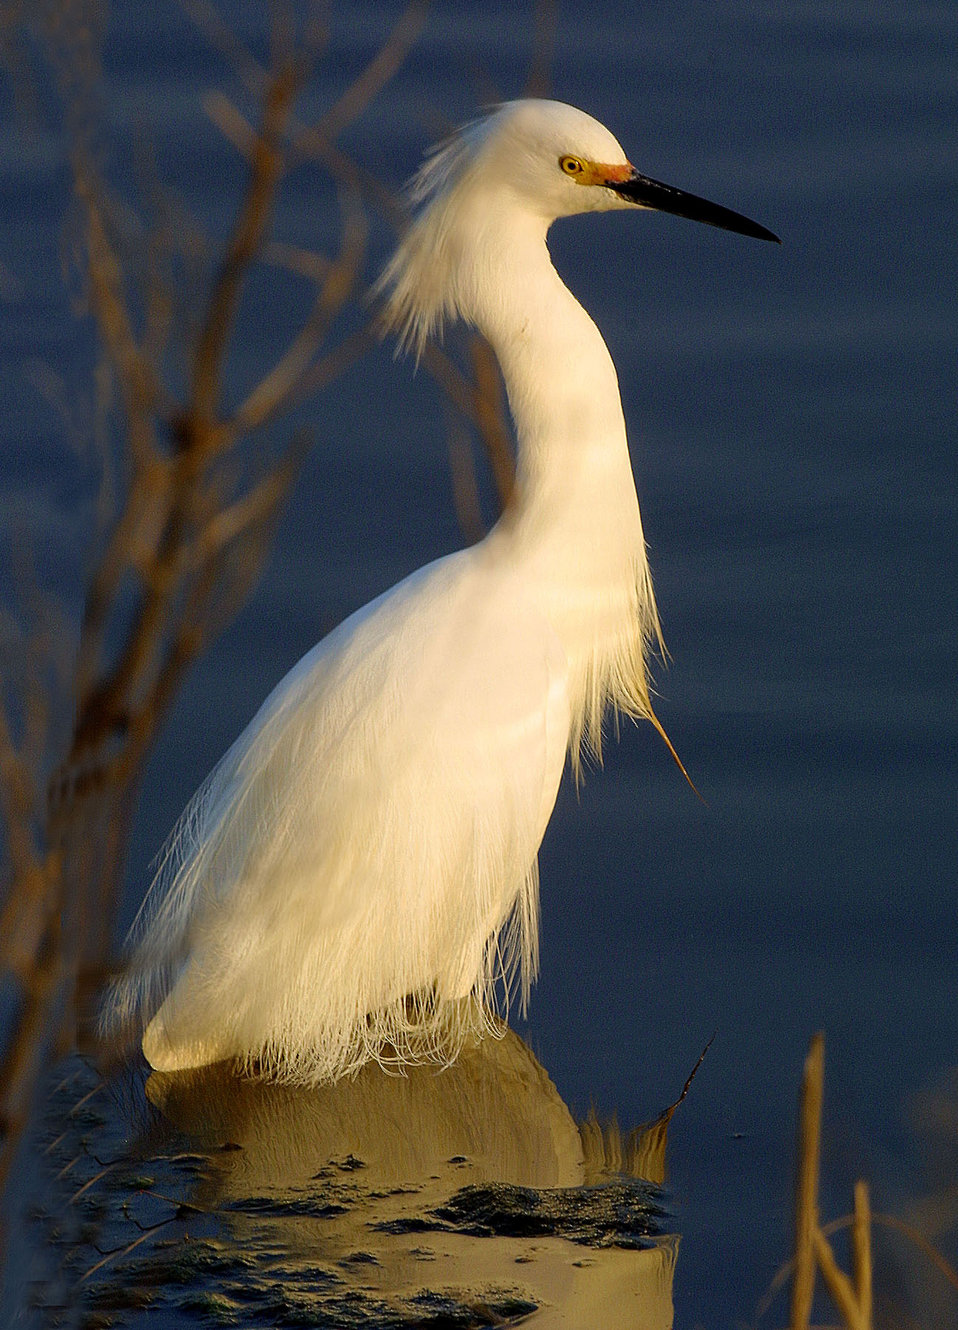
Photo of the Week - Snowy Egret (PA)

Photo of the Week - 7/30/12

Snowy egret photographed at John Heinz National Wildlife Refuge at Tinicum in Philadelphia, PA.